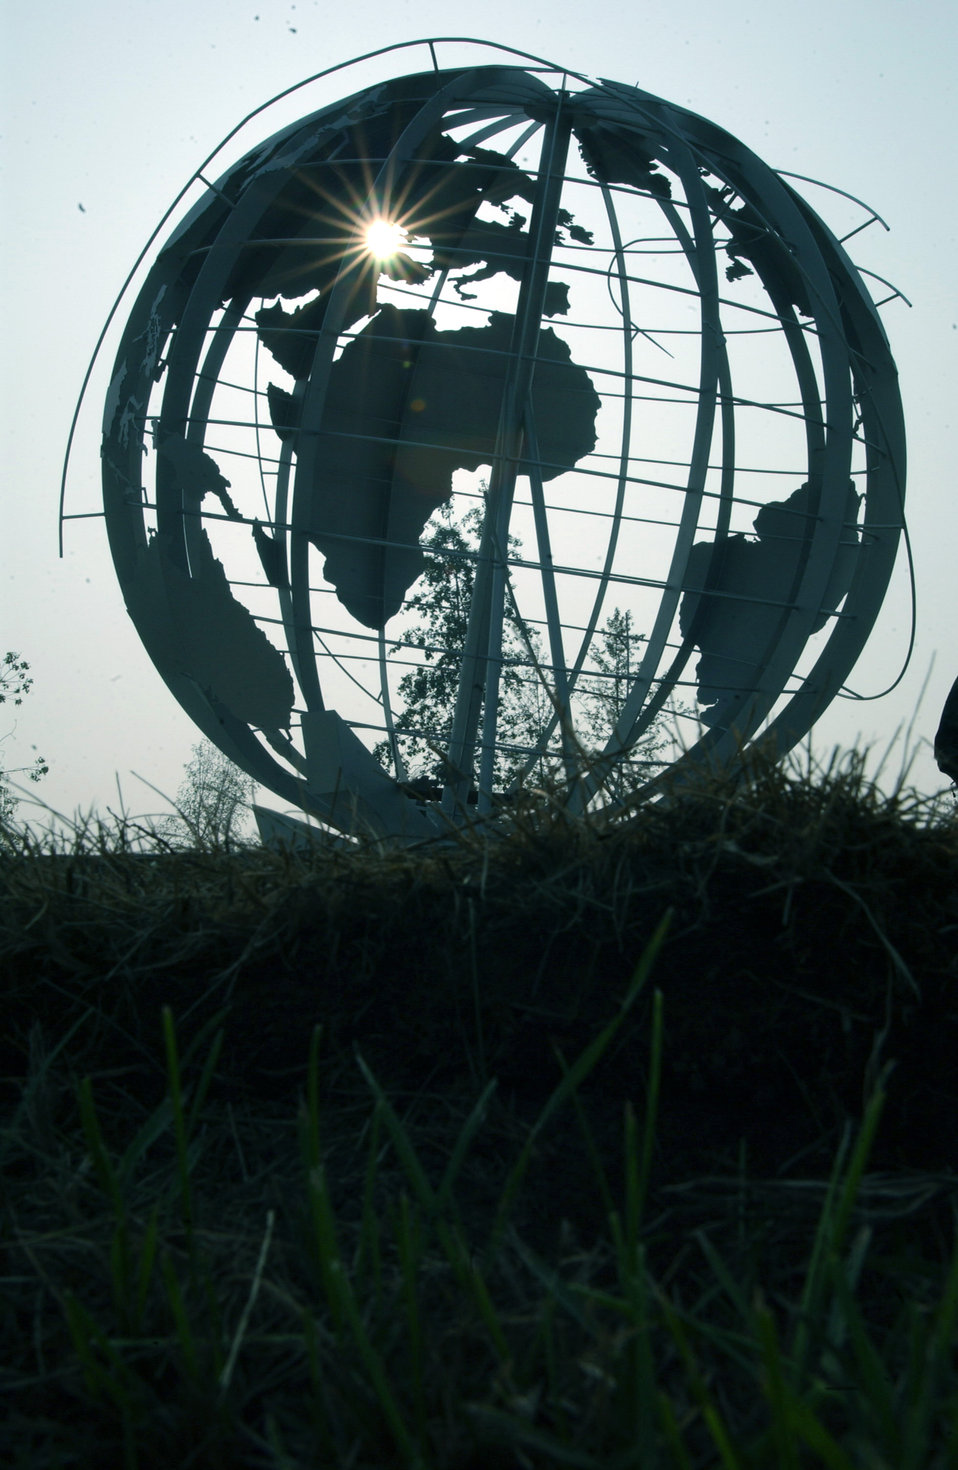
Airman's Memorial

EIELSON AIR BASE BASE, Alaska -- The Airman's Memorial, dedicated to Air Force men and women of the past, present and future, will be completed and officially dedicated at Heritage Park here within the year.